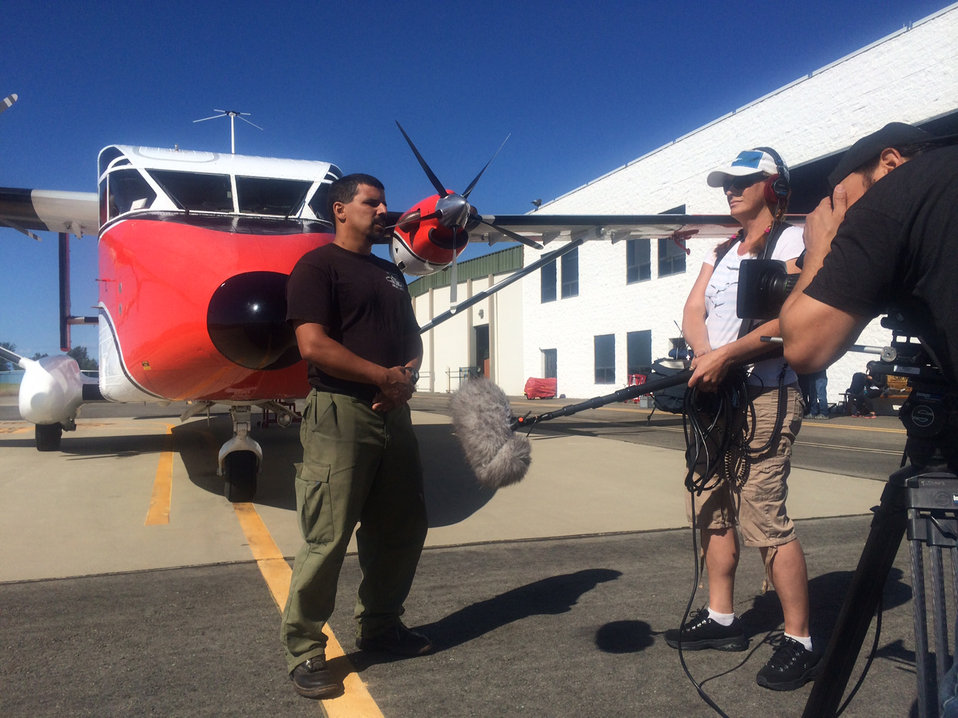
Planes Gomez interview

A Disney Studios crew films U.S. Forest Service smokejumper Luis Gomez as he explains the intricacies of his work. The footage will be seen during a Disney Channel special and as part of the extras when the animated film “Planes: Fire and Rescue” is released on DVD. The Sherpa aircraft behind Gomez is used to fly smokejumpers to locations and is the lead “character” in the film.